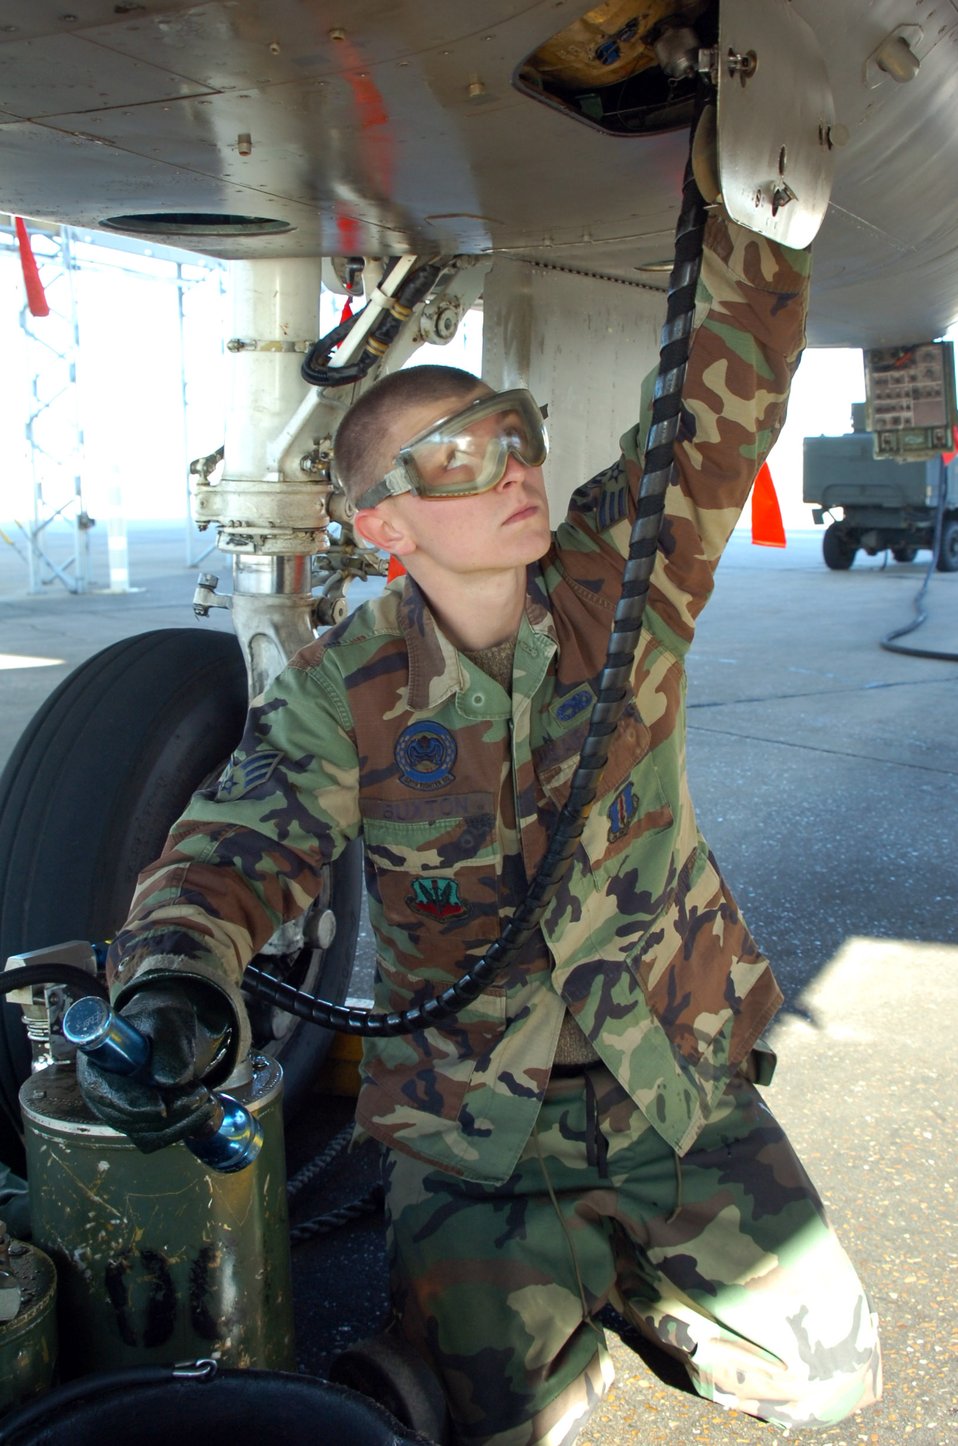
Eagle maintainers

EGLIN AIR FORCE BASE, Fla. (AFPN) -- Crew chief Senior Airman Tyler Buxton services the airframe mounted accessories drive on his F-15 Eagle. The Airman is with the 58th Aircraft Maintenance